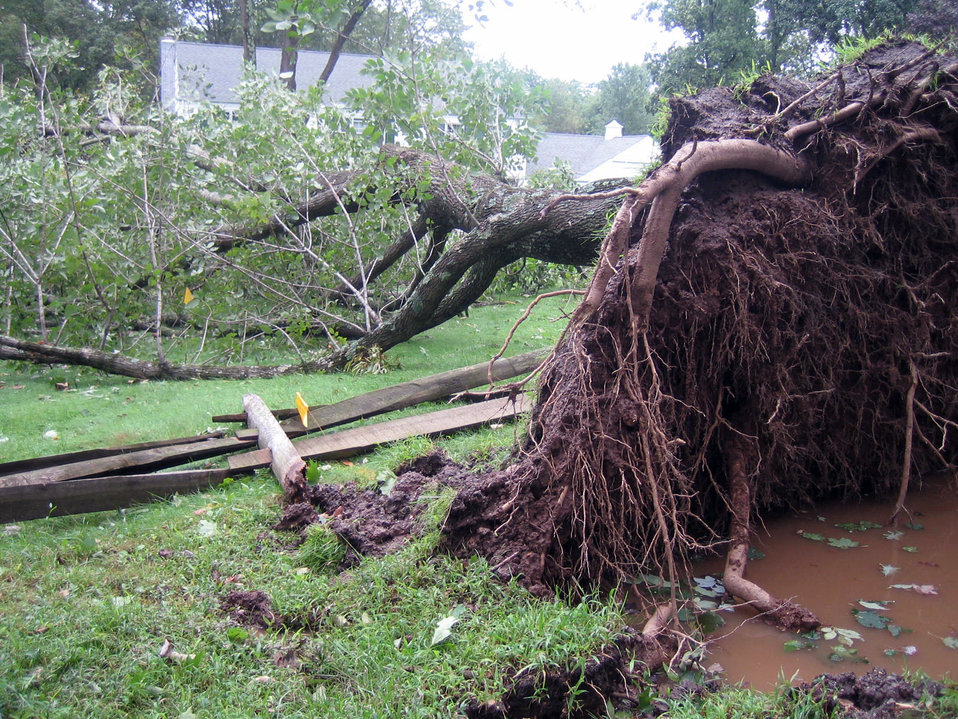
Photo of the Week - Tree uprooted by Hurricane Irene (NJ)

Photo of the Week - 8/29/11

Uprooted tree from Hurricane Irene at Great Swamp National Wildlife Refuge in Basking Ridge, NJ.